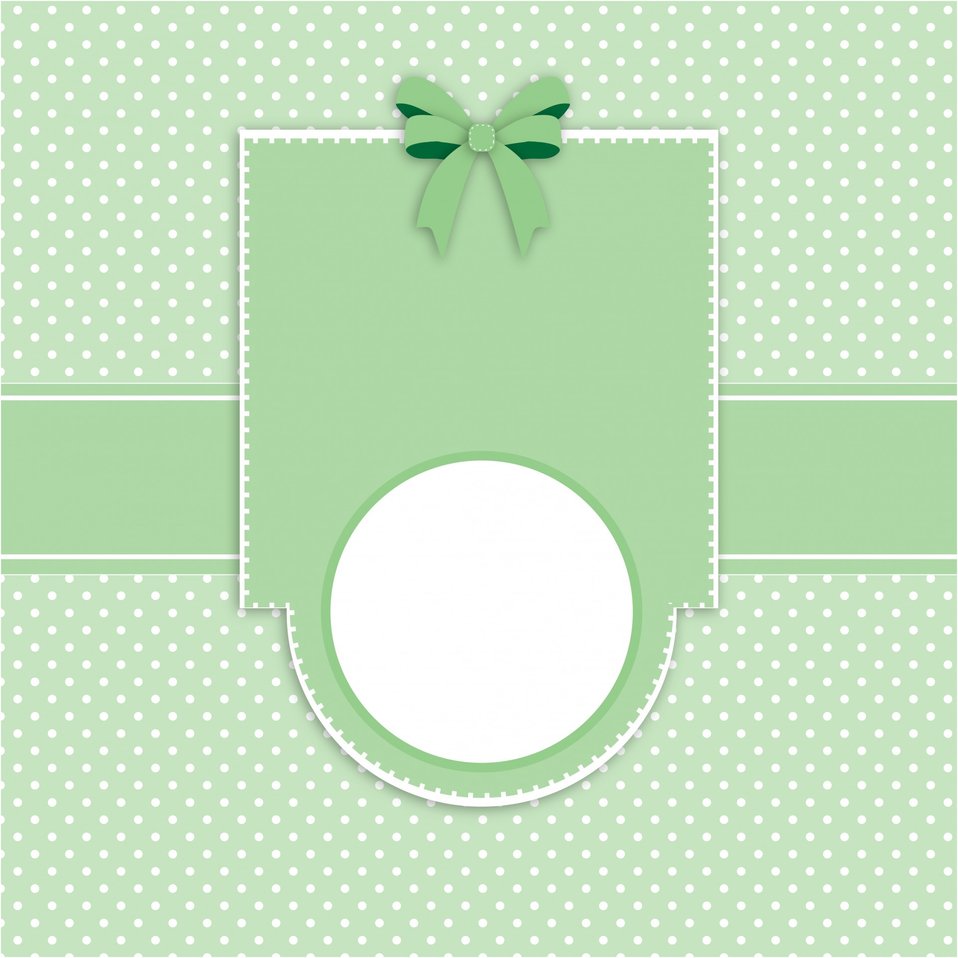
Card invitation polka dots template

Green and white polka dots card template for announcements, invitations, wedding, baby shower, new baby, anniversary etc.